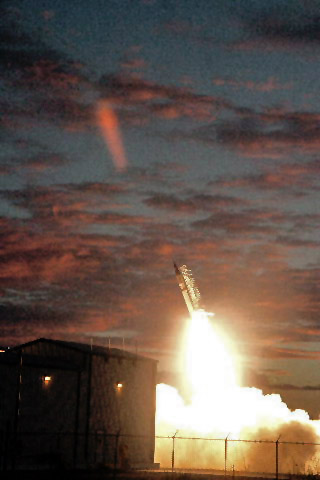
Hypersonic vehicle completes inaugural flight

A Navy-supplied rocket propels the Re-Entry Structures Experiment into space following a 6:45 a.m. launch Sept. 20 at White Sands Missile Range, N.M. It reached an altitude of 95,000 feet at Mach 5 (five times the speed of sound, or 3,800 miles per hour). It then descended to the desert in two pieces, which safely landed more than 21 miles north of its launch point.